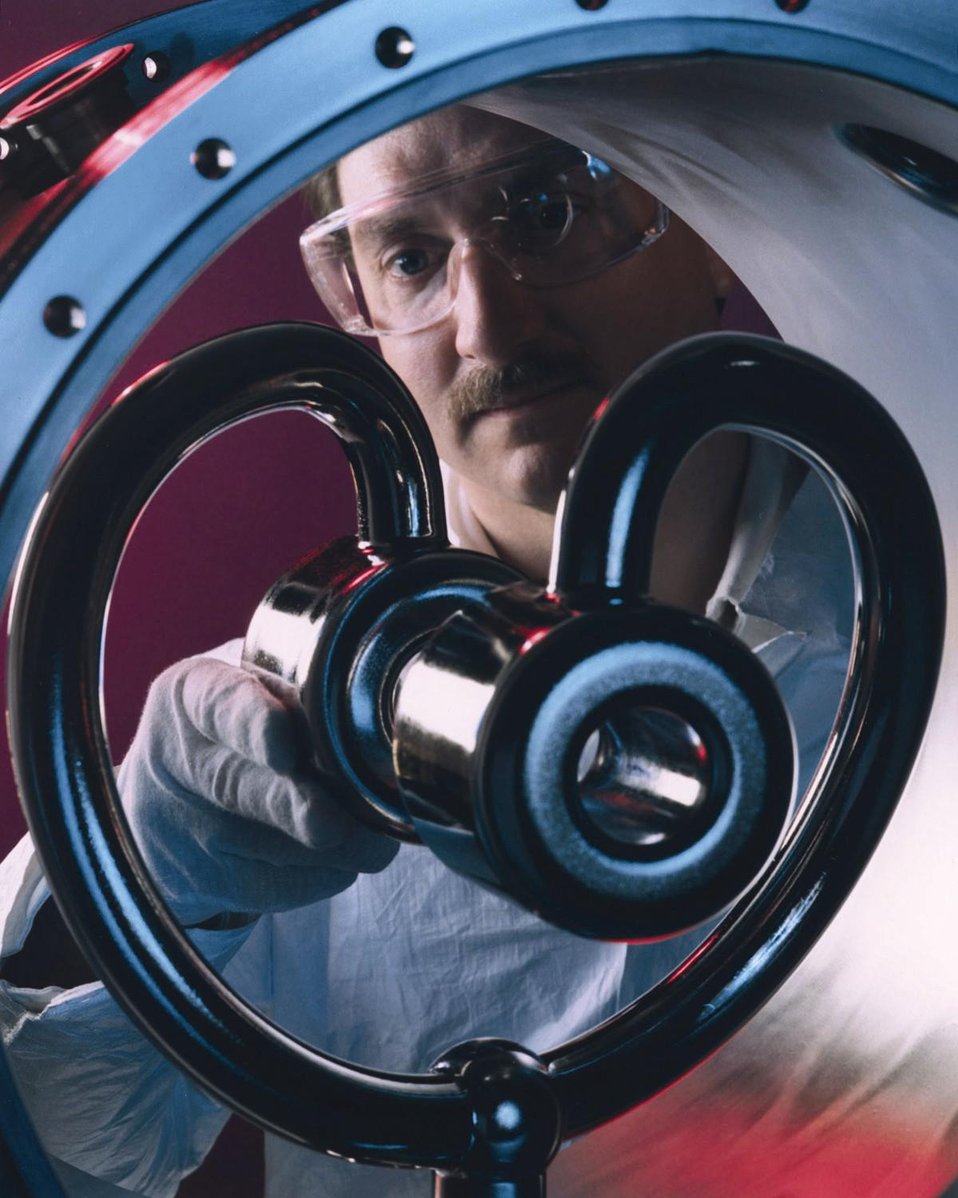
AT THE HEART OF ATLAS, THE ARGONNE TANDEM-LINAC ACCELERATOR SYSTEM, ARE THESE SUPERCONDUCTING SPLIT-RING RESONATORS.

ARGONNE NATIONAL LABORATORY'S ATLAS IS THE WORLD'S FIRST SUPERCONDUCTING ACCELERATOR FOR PROJECTILES HEAVIER THAN THE ELECTRON, AND CAN BE USED TO ACCELERATE A BEAM OF ANY ATOMIC NUCLEUS.